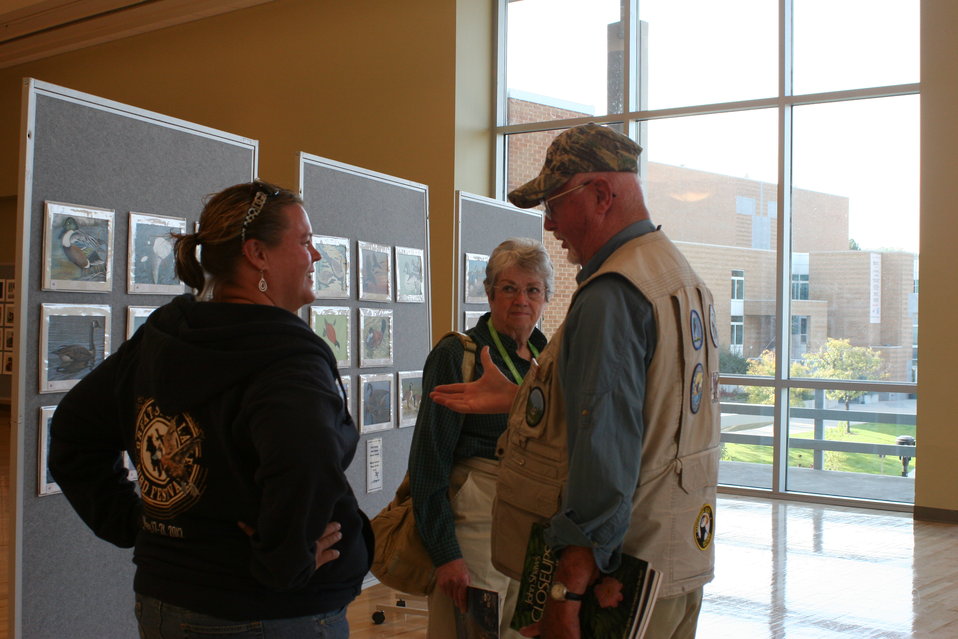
Outreach

Photo Credit: Suzanne Fellows / USFWS
The U.S. Fish & Wildlife Service sponsored the 2012 Federal Duck Stamp Art Contest September 28 and 29 in Ogden, Utah, at Weber State University. A panel of five judges was responsible for choosing the art work used to design the 2013-2014 Migratory Bird Hunting and Conservation Stamp.